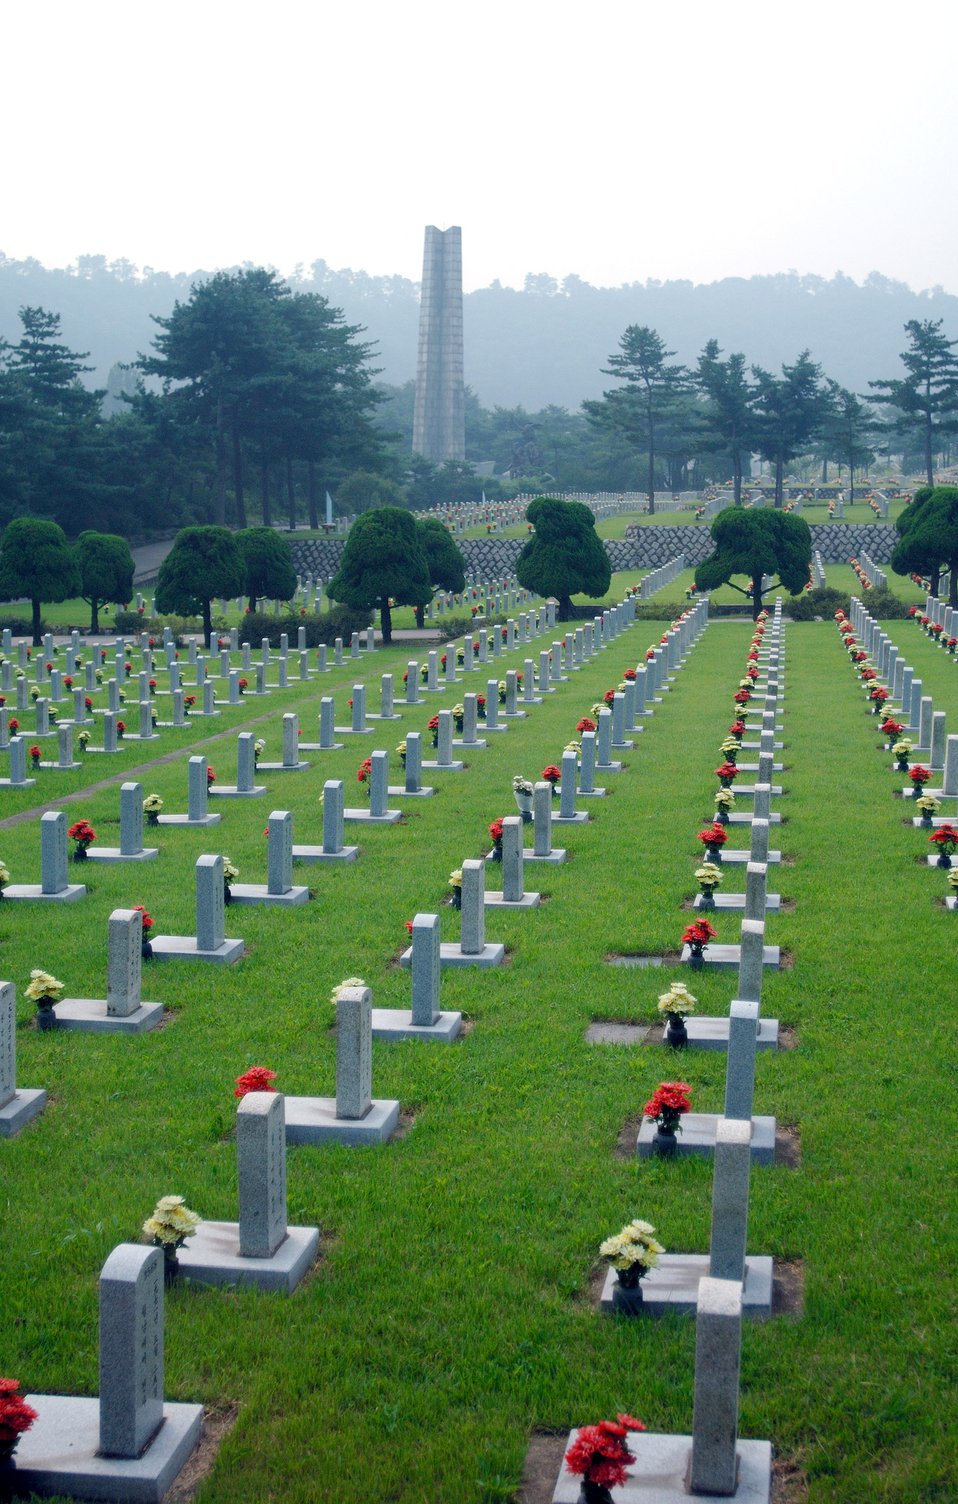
Not Forgotten

Thousands of Korean War tombstones dot the South Korean National Cemetery. The South Korean government's Revisit Korea program invites war veterans each year to come to South Korea to honor the men and woman from 21countries who served during the Korean War.